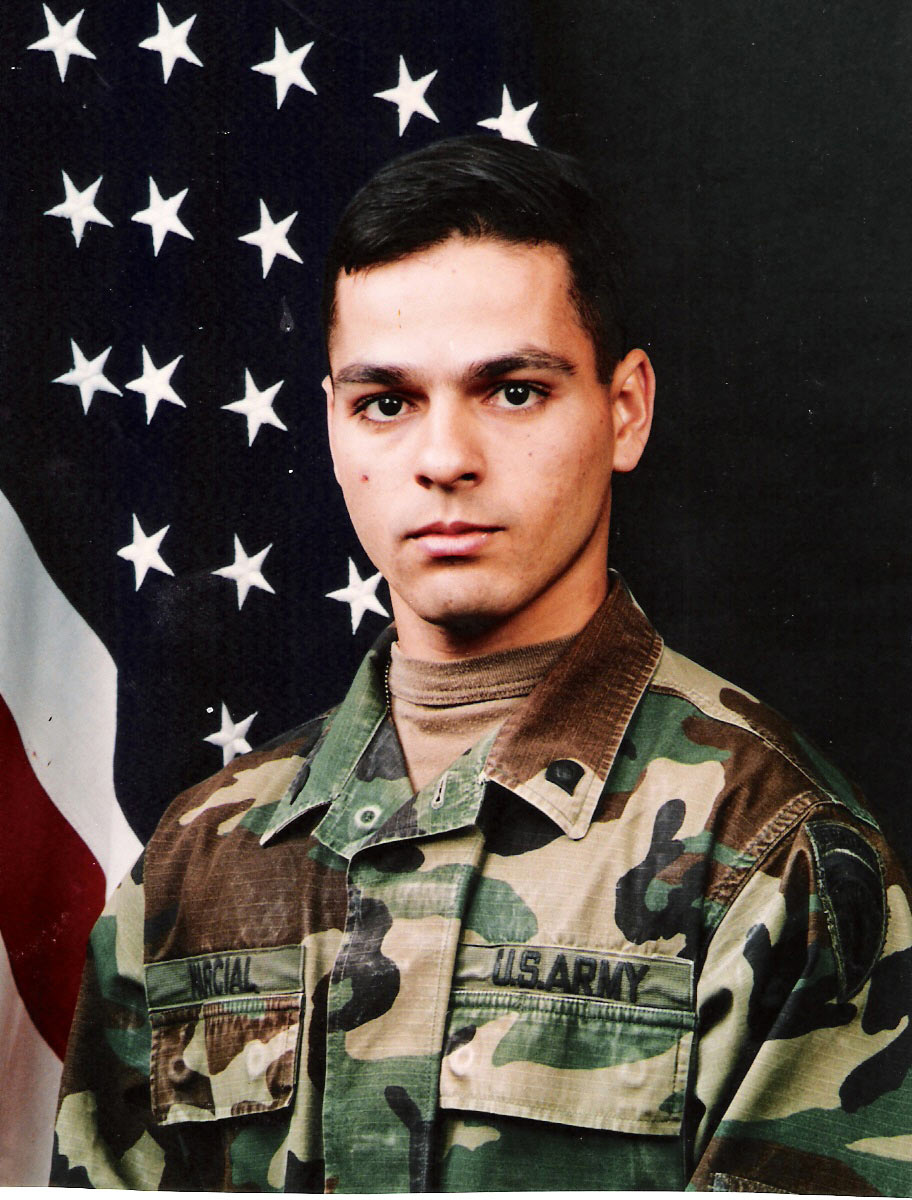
Bryant Marcial Rivera-Southeast Region

Bryant Marcial Rivera is the Supervisory Federal Wildlife Officer at the Caribbeans Island National Wildlife Refuge Complex in Puerto Rico. He served in the U.S. Army and was stationed in Germany during his tour of duty. He also served with the Puerto Rico National Guard after leaving active duty for seven years.